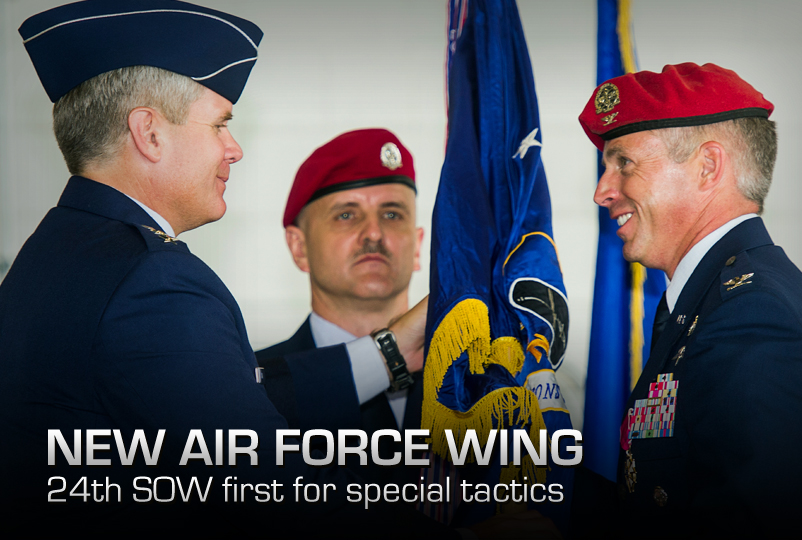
New Air Force Wing